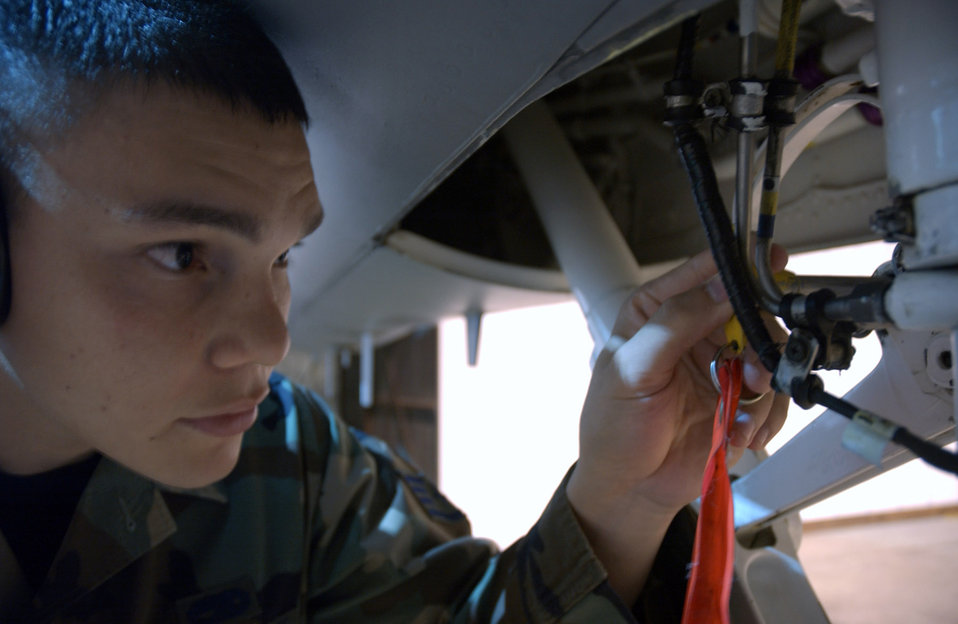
Air surveillance

ELMENDORF AIR FORCE BASE, Alaska -- Staff Sgt. Andres Reeve pulls a top pin out from under an F-15 Eagle during Alaska Shield/Northern Edge 05 here Aug. 15. The exercise assembles an integrated federal, state and local capability of prevention, preparedness, response and recovery for extreme events including terrorism. Sergeant Reeve is a crew chief with the 3rd Aircraft Maintenance Squadron.